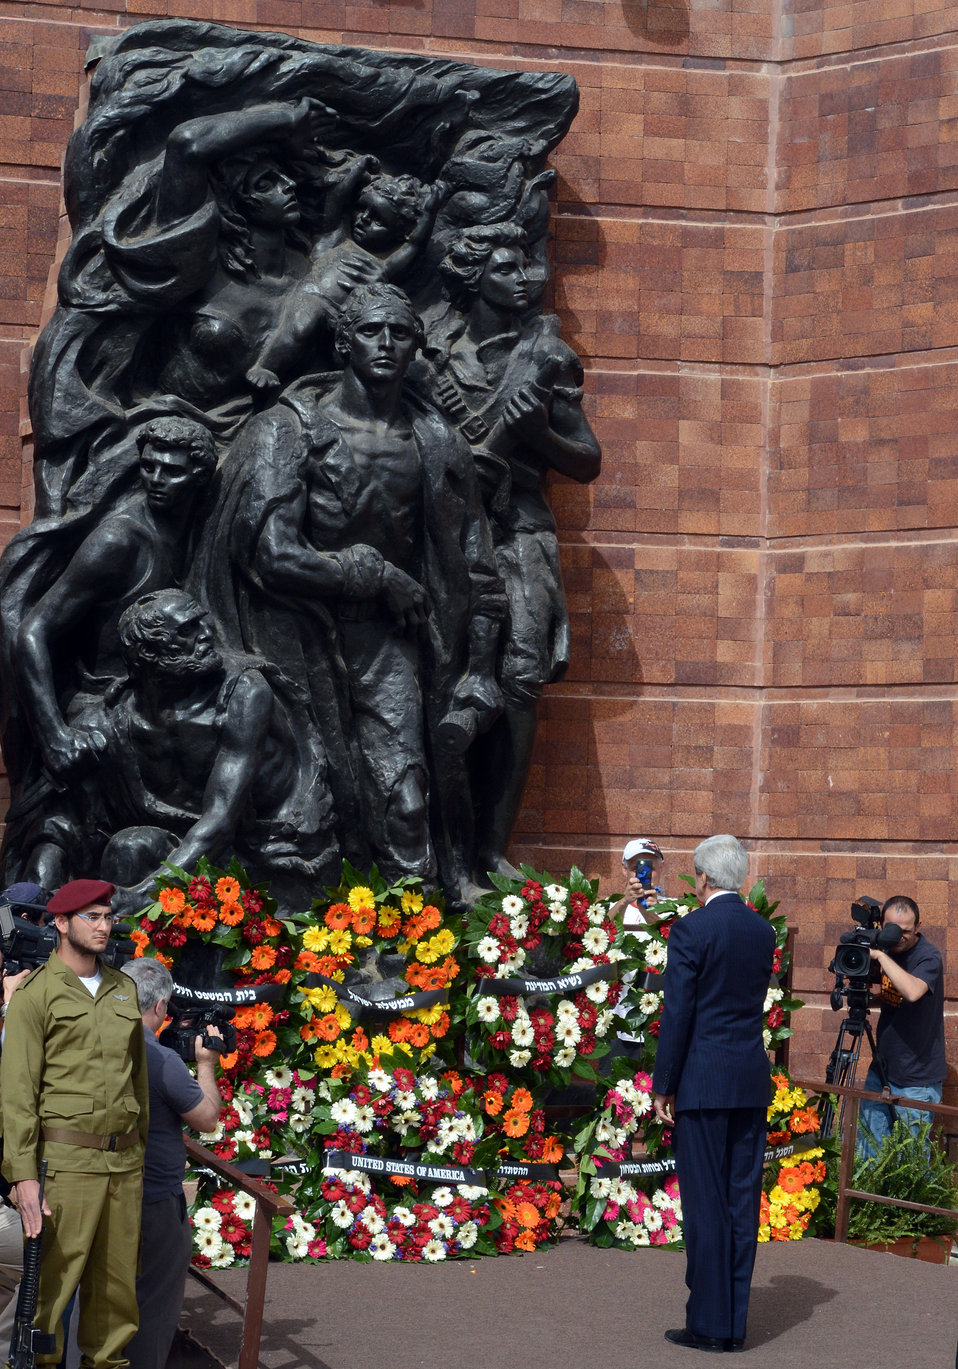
Secretary Kerry Lays a Wreath at Yad Vashem

U.S. Secretary of State John Kerry lays a wreath at Yad Vashem during a ceremony in Jerusalem for Israel's Holocaust Remembrance Day, April 8, 2013.